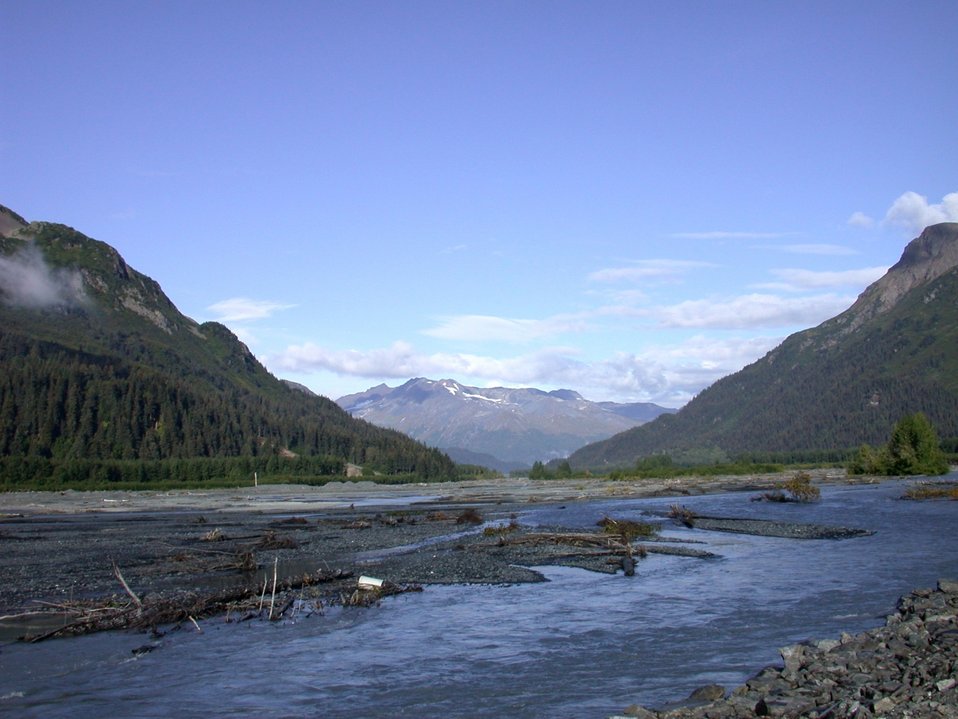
Moose Pass area between Seward and Anchorage.